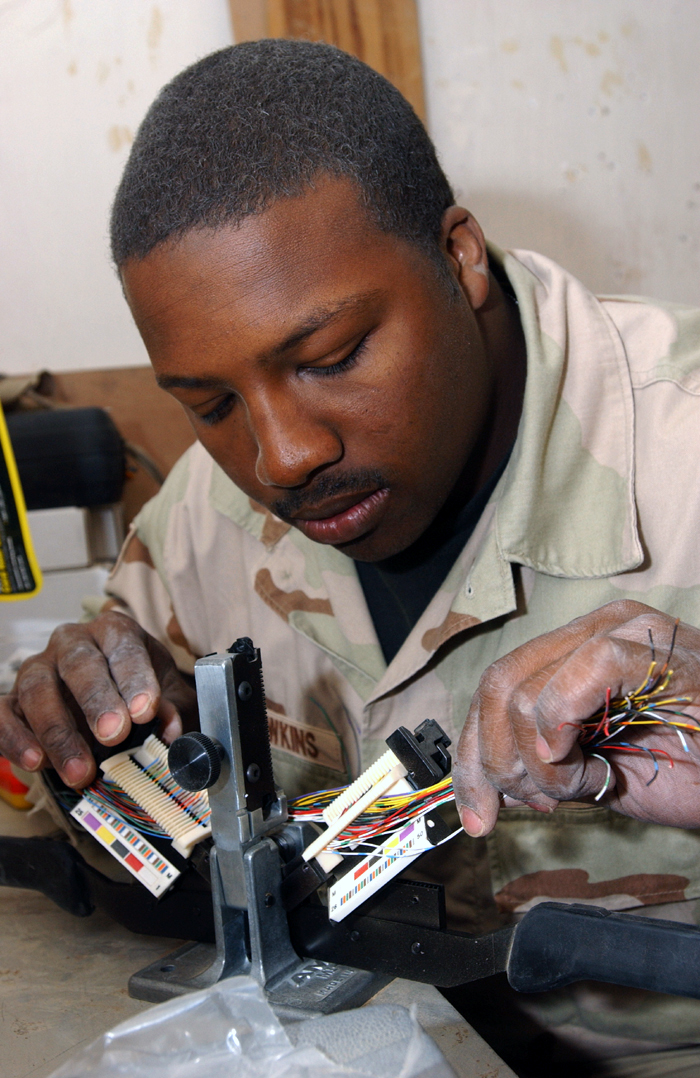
Delicate work

OPERATION IRAQI FREEDOM -- Staff Sgt. Kelvin Hawkins makes a connection on a communications cable at Tallil Air Base in southern Iraq. Hawkins is a telephone systems technician with the 5th Combat Communications Group from Robins Air Force Base, Ga.